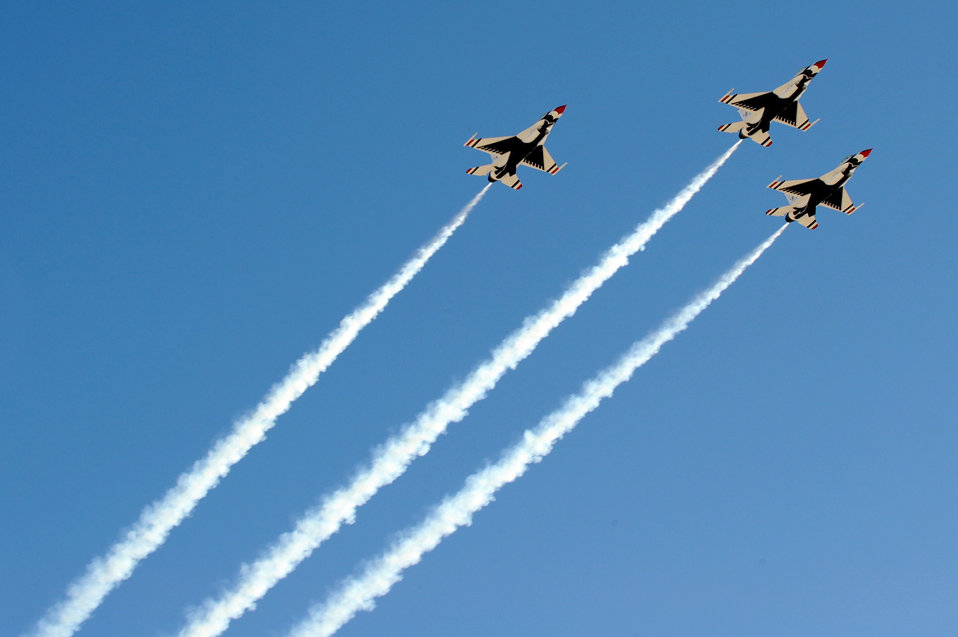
Thunderbird returns to Nellis for final farewell

The Air Force Thunderbirds perform the missing man formation during the repatriation and funeral service for Maj. Russell C. Goodman Jan. 14, 2010, at Nellis Air Force Base, Nev. Major Goodman served as the narrator for the Air Force Thunderbirds from 1964 to 1965 and was declared missing in action after his aircraft was hit by a surface-to-air missile in February 1967 while on a combat mission over North Vietnam.